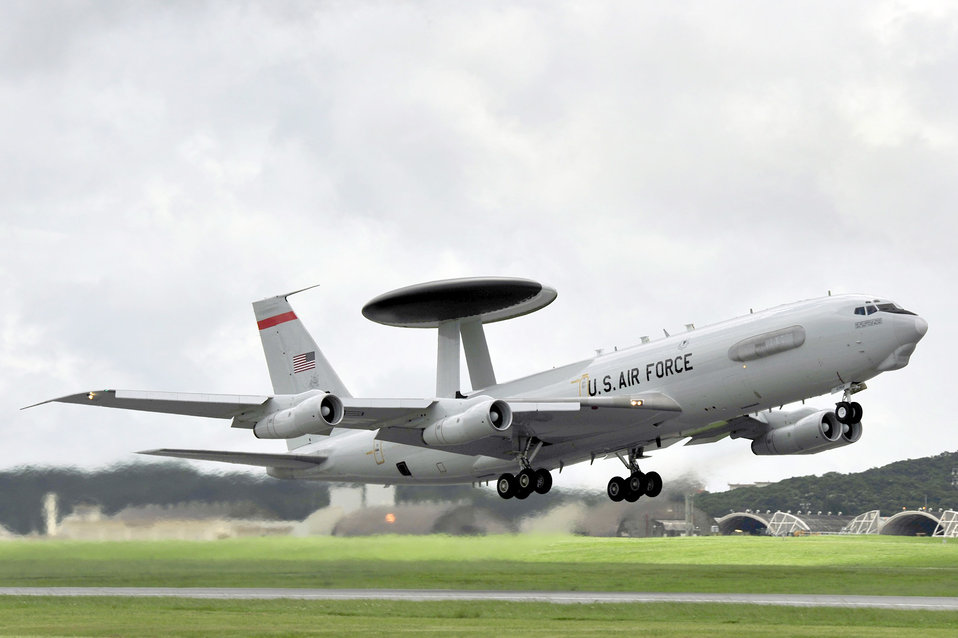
71st EACS

Airmen from the 71st Expeditionary Air Control Squadron work on the E-3 Sentry like the one shown here to provide command and control over the sky in Afghanistan and air defense of the Arabian Gulf. The E-3 is an airborne warning and control system aircraft that provides all-weather surveillance, command, control and communications needed by commanders of U.S., NATO and other allied air defense forces.